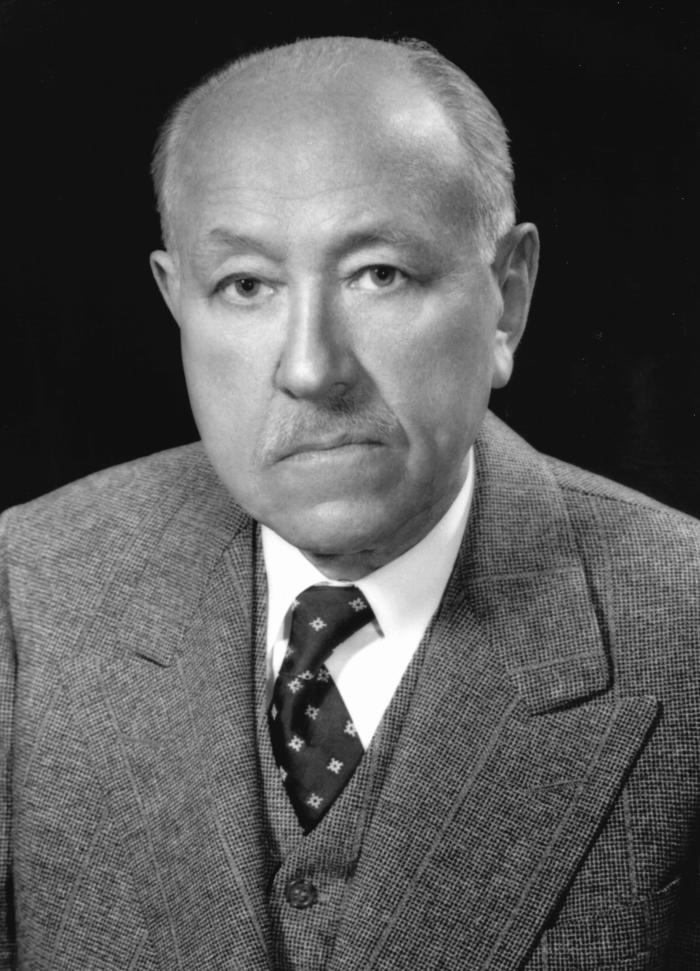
Dr. Frederick S. McKay's observations of the effects of fluoride in drinking water led to worldwide advances in dentistry.